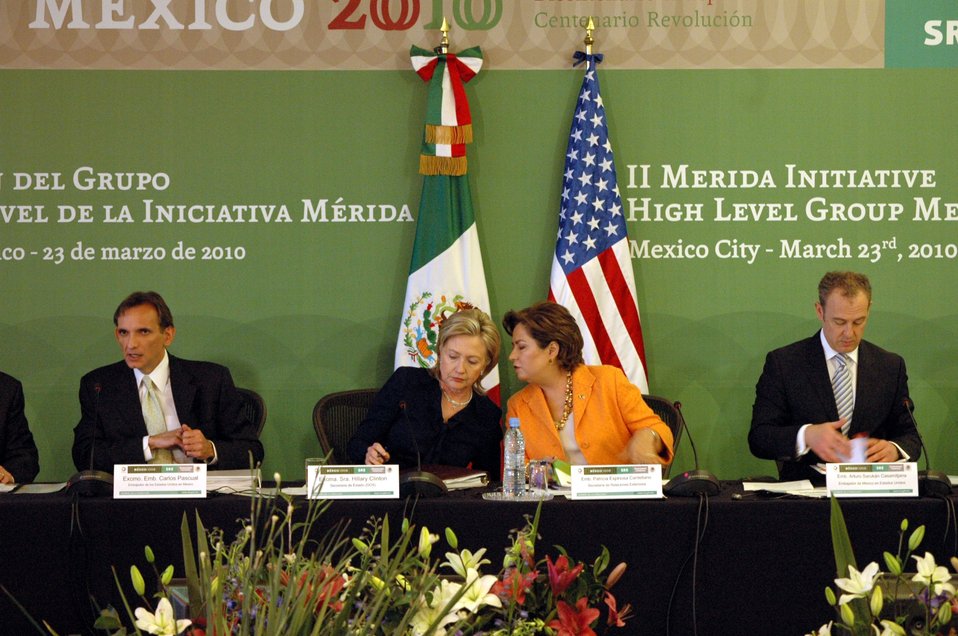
Secretary Clinton With Secretary Espinosa and Ambassadors Pascual and Sarukhan

U.S. Secretary of State Hillary Rodham Clinton and Secretary Espinosa, flanked by Ambassadors Pascual and Sarukhan, preside the Second Merida Initiative High Level Working Group Meeting, Mexican Secretariat of Foreign Affairs, Mexico City, March 25, 2010.